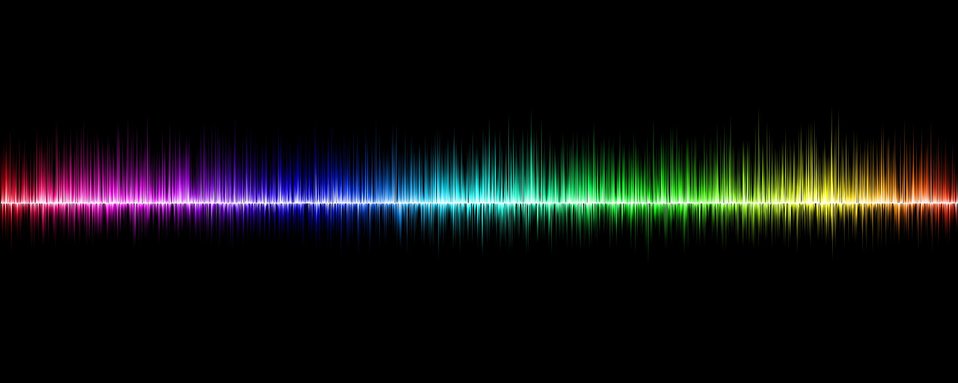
Sound waves

A rainbow of sound waves..